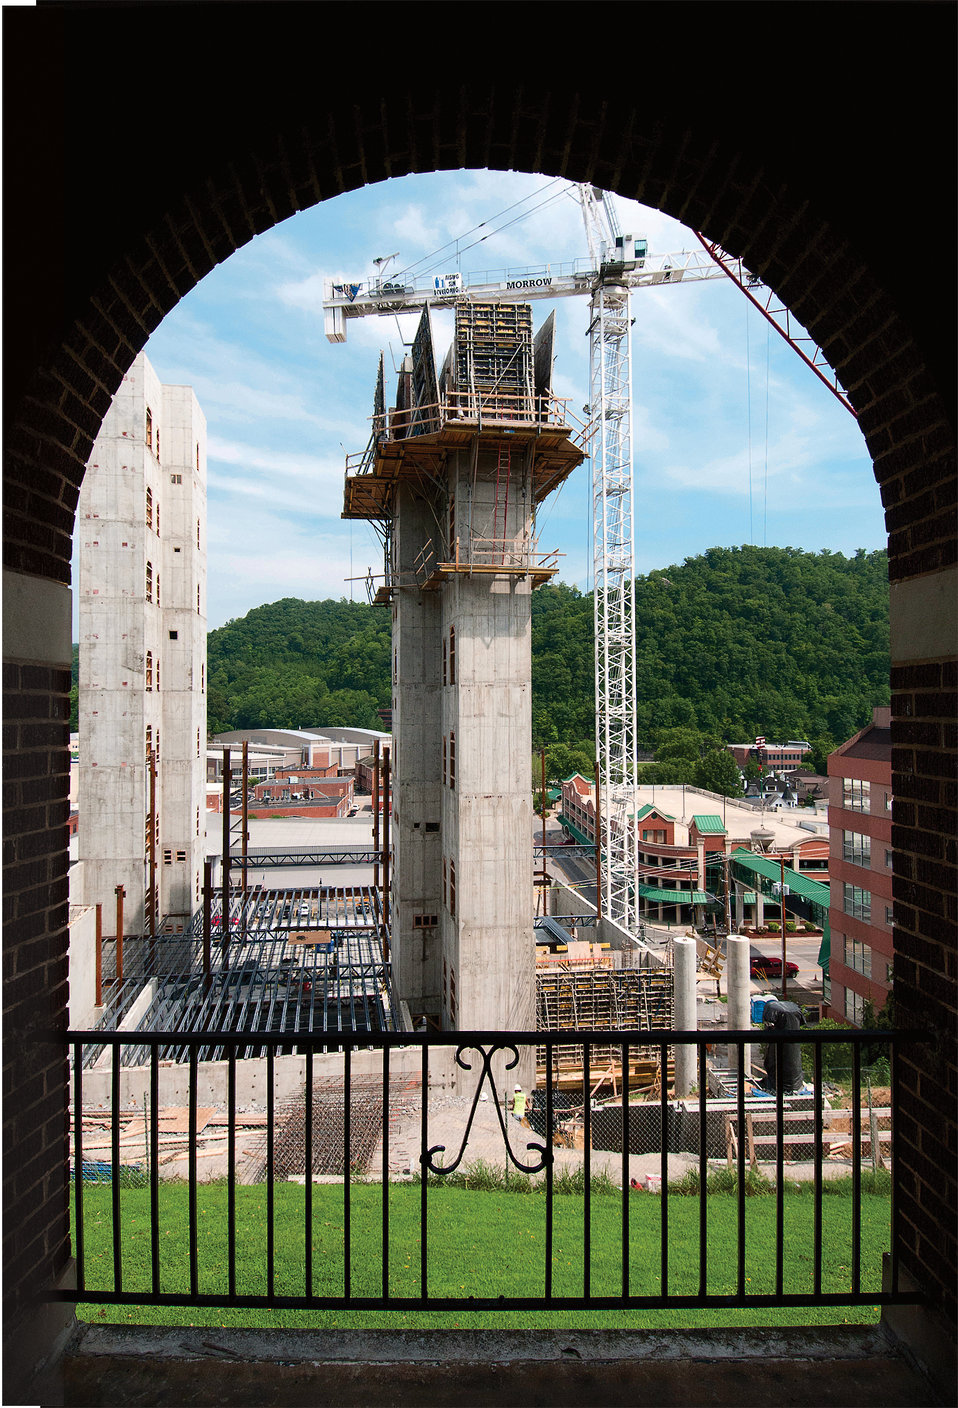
Elevator shafts are the first and core structures of the $25 million expansion project at Pikeville College School of Osteopathic Medicine (PCSOM), Pikeville, KY on Tuesday, July 12, 2011. The project will provide the undergraduate college with a new educational facility and an expanded clinical skills center. The nine-story structure is part of the new facility that will include two lecture halls, a gross anatomy lab, two research labs, offices, small group classrooms and student study space. A clinical skills training and evaluation center that will house 12 specially equipped examination rooms will be within the building and serve as training and testing centers for students in programs using standardized patients and high-fidelity robotic patient simulators. An expanded osteopathic manipulative medicine lab and clinic will provide learning opportunities, as well as housing PCSOM’s free community clinic, which will be easy to reach from the sidewalk. Plans for the building also include a new cafeteria for the campus community. 'We are embarking on a vital project that will greatly enhance the excellent medical education our student doctors receive,' said Pikeville College President Paul E. Patton. 'At the same time, it will allow us to expand the current class size from 75 to 125 students, increasing the total enrollment from 300 to 500 students. The college initiated a capital construction campaign. In order to secure adequate funding, the board of trustees authorized borrowing up to $25 million from the USDA Rural Development. Commitments of $1.6 million have been secured through gifts and pledges, including $500,000 from the James Graham Brown Foundation. Significant grants have also been received from the Appalachian Regional Commission, and the U.S. Small Business Administration.